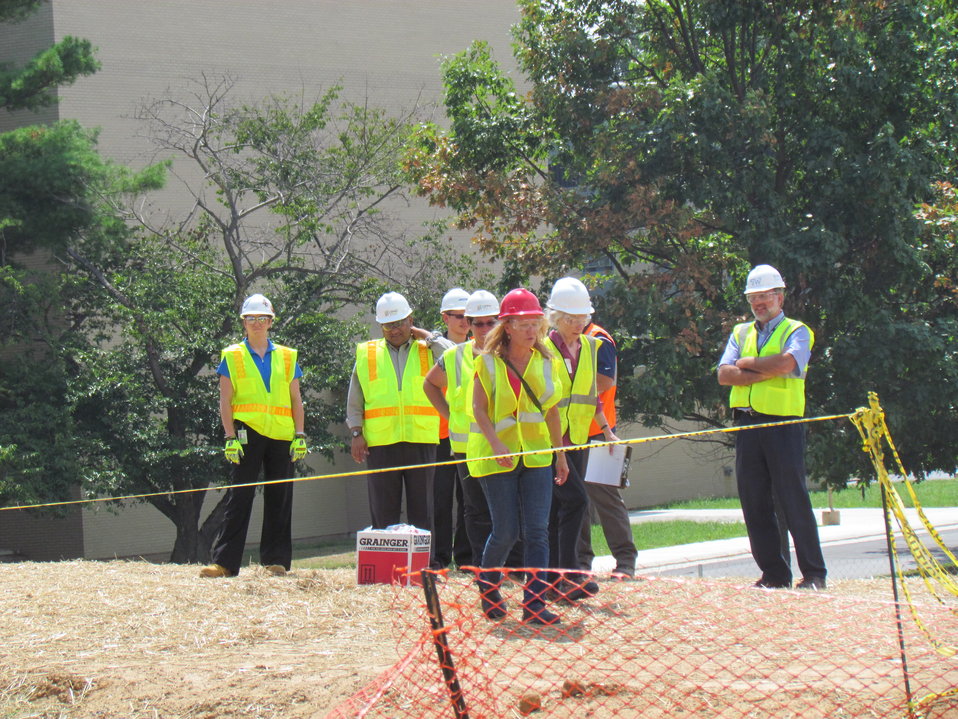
Net-Zero Energy Residential Test Facility - Staff members of Building Science Corporation, Therrien Waddell, and NIST awaiting results from air leakage testing on the building envelope.